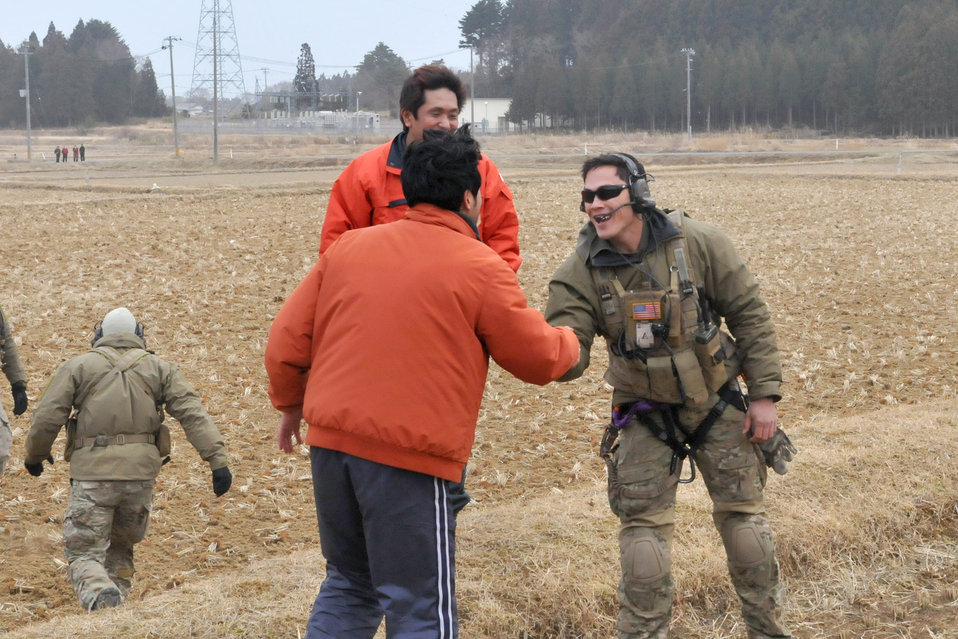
HH-60s deliver supplies to decimated Kessenuma City

A Japanese relief worker shows his appreciation after a pair of HH-60G Pave Hawks deliver food, water and medical supplies March 20, 2011, at Yokota Air Base, Japan. Airmen from the 33rd Rescue Squadron successfully transported supplies to displaced people in Kessenuma City, in support of Operation Tomodachi. Kessenuma experienced massive destruction from the earthquake and tsunami in northeastern Japan, March 11.